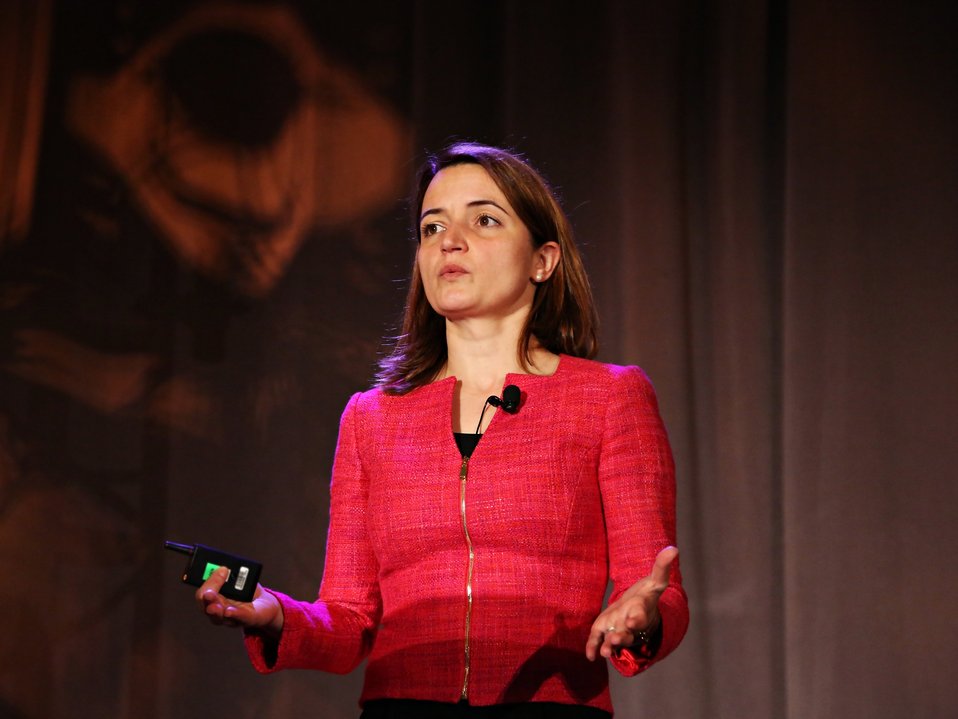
Day 2 Keynote Session 27

Dr. Lidija Sekaric, Technology To Market Program Manager providing a SunShot Portfolio Overview.